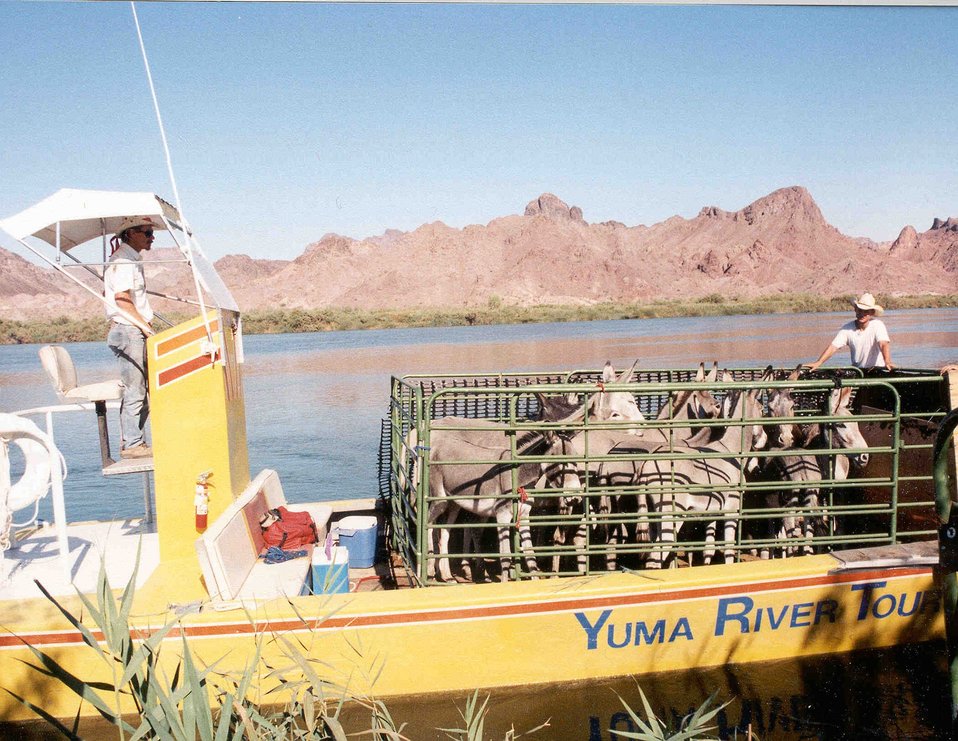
Wild burros being transported by boat to a holding facility due to the gather being located in the wilderness area.